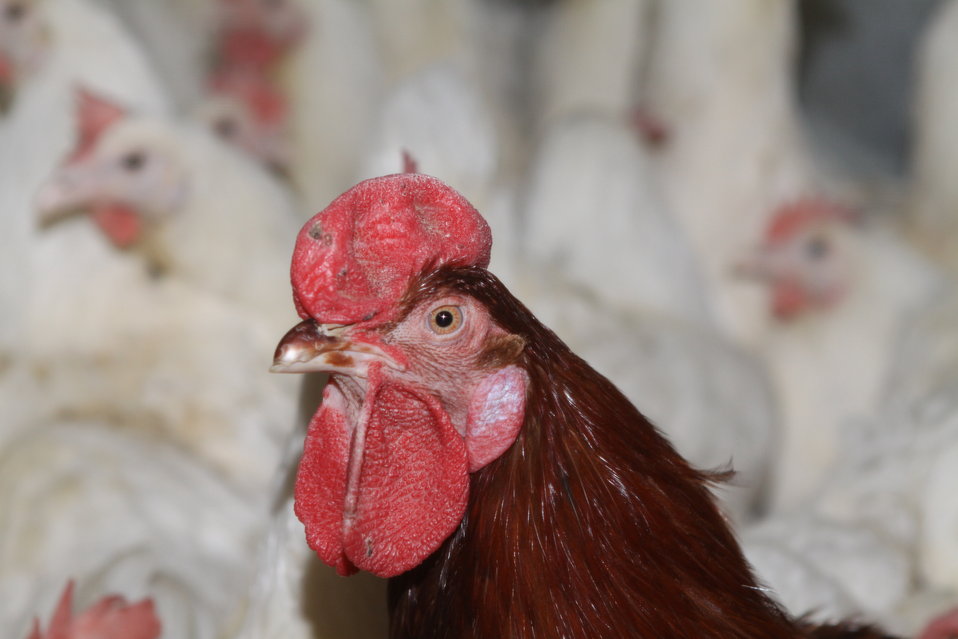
Bolan Poultry Farm